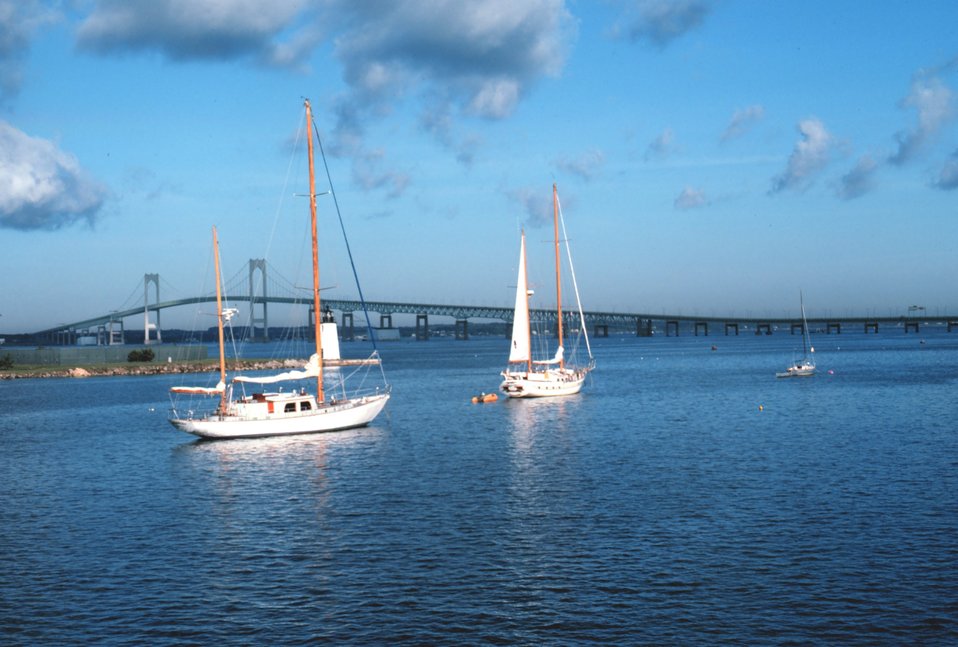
Sail boats with Newport Bridge in the background